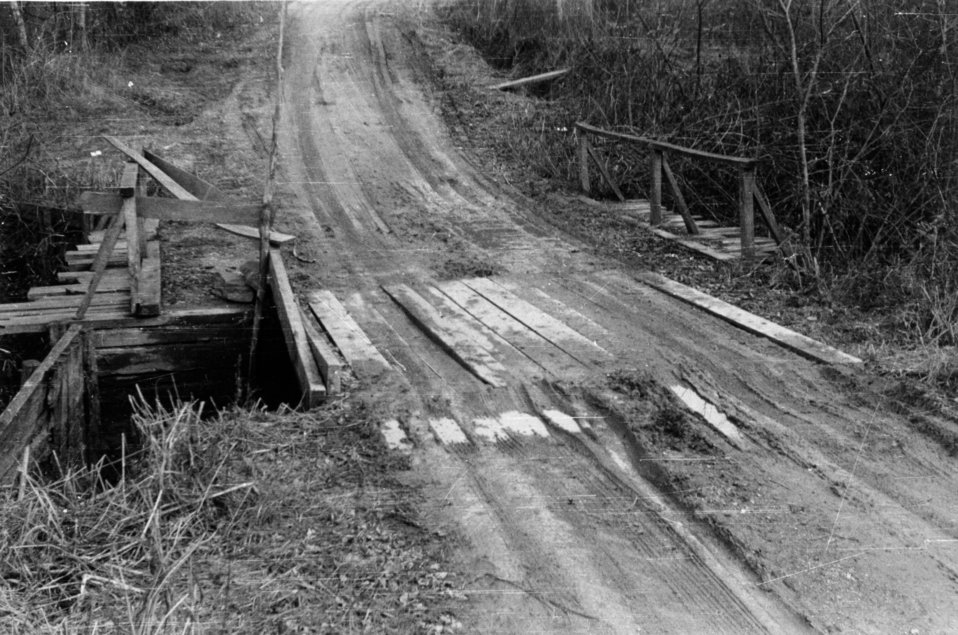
Recreation at Oak Ridge